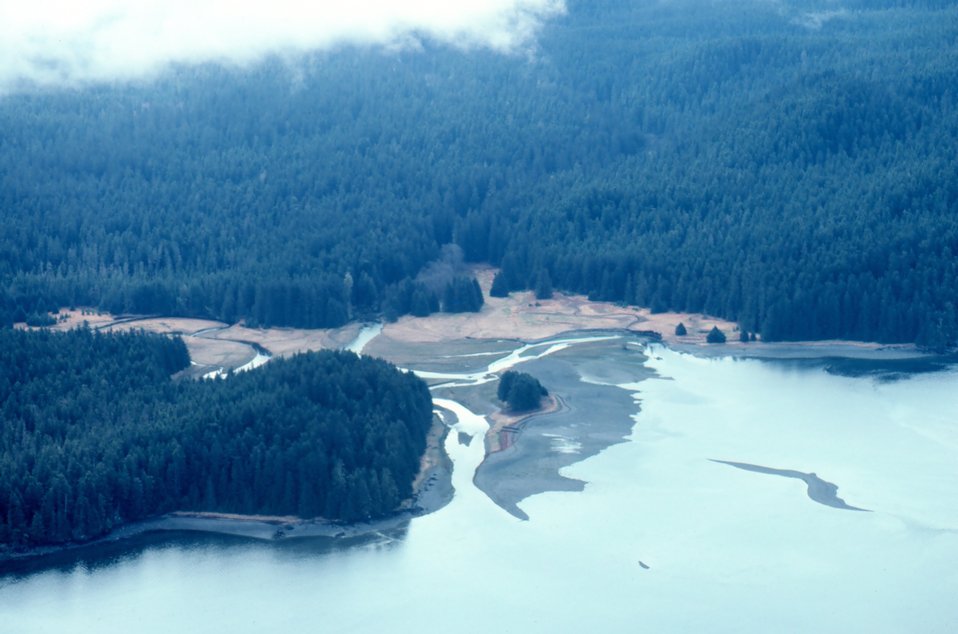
Small stream with delta in Tenakee Inlet.